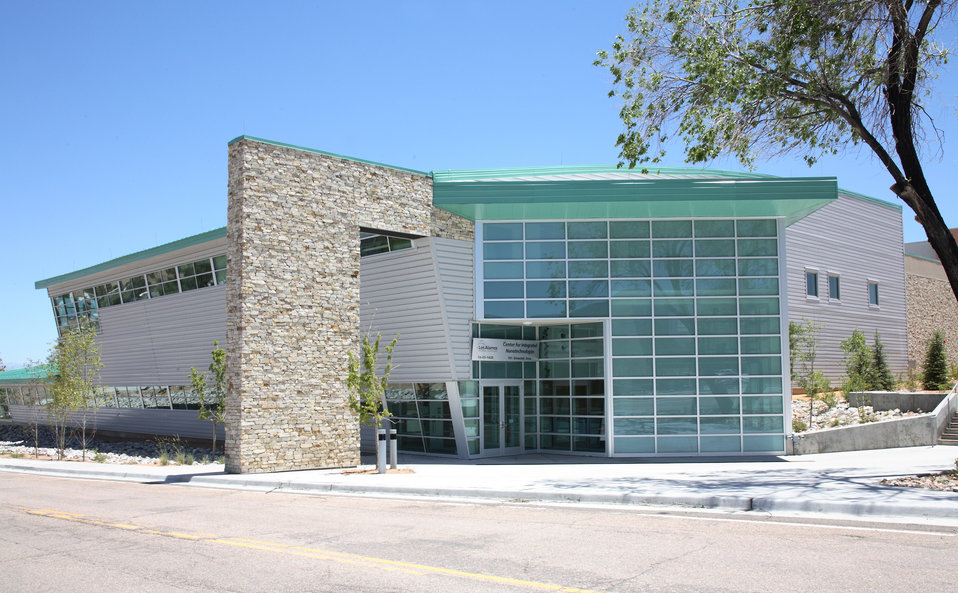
CINT IS A PART OF NANOSCALE SCIENCE RESEARCH CENTER OPERATING AS A USER FACILITY DEVOTED TO SCIENTIFIC PRINCIPLES THAT GOVERN THE DESIGN, PERFORMANCE & INTEGRATION OF NANOSCALE MATERIALS.

CINT IS ONE OF FIVE NSRC'S THROUGHOUT THE U.S THAT FORM AN INTEGRATED NATIONAL PROGRAM, AFFILIATED WITH MAJOR FACILITIES AT THE DOE'S NATIONAL LABORATORIES, TO COVER THE DIVERSE ASPECTS OF NANOSCIENCE AND TECHNOLOGY. THIS COMPLEX ASPIRES TO BECOME A CORNERSTONE OF THE NATION'S NANOTECHNOLOGY REVOLUTION, CONTRIBUTING TO DOE'S PRINCPLE MISSIONS IN NATIONAL DEFENSE AND THE ENVIRONMENT WHILE PROVIDING AN INVALUABLE RESOURCE FOR UNIVERSITES AND INDUSTRIES. IT'S CORE FACILITY IN ALBUQUERQUE AND GATEWAY FACILITIES AT LOS ALAMOS AND SANDIA NATIONAL LABORATORIES. CINT PROVIDES OPEN ACCESS TO TOOLS AND EXPERTISE NEEDED TO EXPLORE THE CONTINUUM FROM SCIENTIFIC DISCOVERY TO THE INTEGRATION OF NANOSCIENCE INTO THE MICRO AND MARCO WORLD.